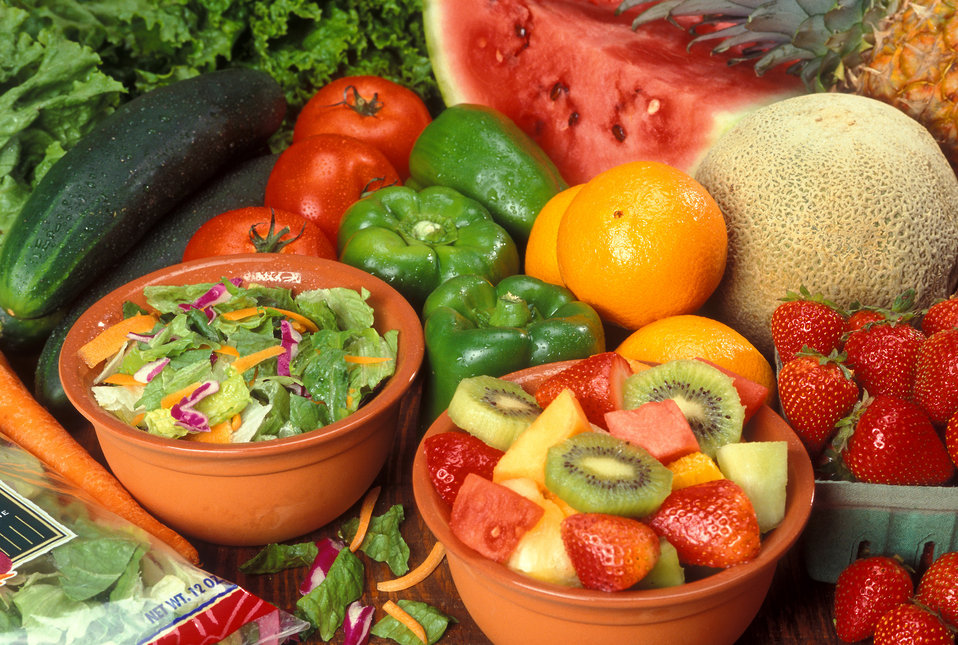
Fresh cut fruits and vegetables arranged together on Sept. 4, 2007.